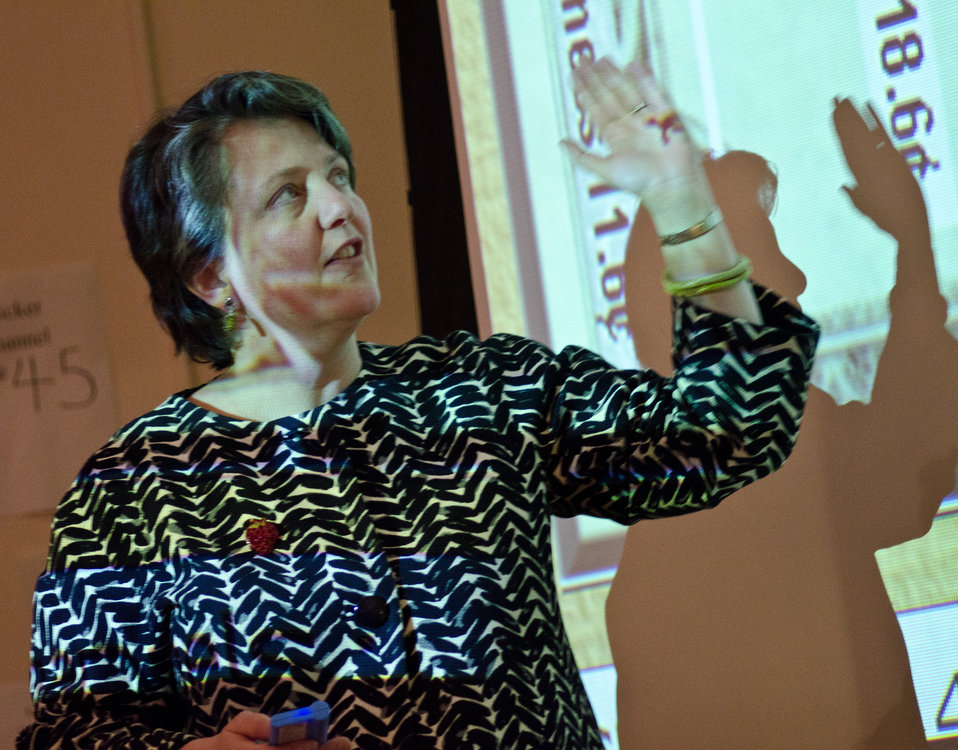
U.S. Department of Agriculture (USDA) Deputy Secretary Kathleen Merrigan presentation of “Know your Farmer Know your Food” initiative to students and faculty at the Animal Sciences / Agricultural Engineering Building at the University of Maryland, in College Park, MD, on Thursday, April 7, 2011. Deputy Secretary Merrigan’s interactive presentation utilized wireless polling in the lecture room to present questions to the audience who used handheld devices to choose from a list of multiple answers. Their answers were instantly tabulated, then Merrigan revealed their top choice on the screen, followed by the correct answer, usually revealing an error and misconceptions. Her talk covered support of local farmers; strengthening rural communities, promoting healthy eating, protecting natural resources; grants, loans and other support USDA provides as well as stories of innovation; industry and government cooperation; and careers opportunities in agriculture, ranching and the USDA.